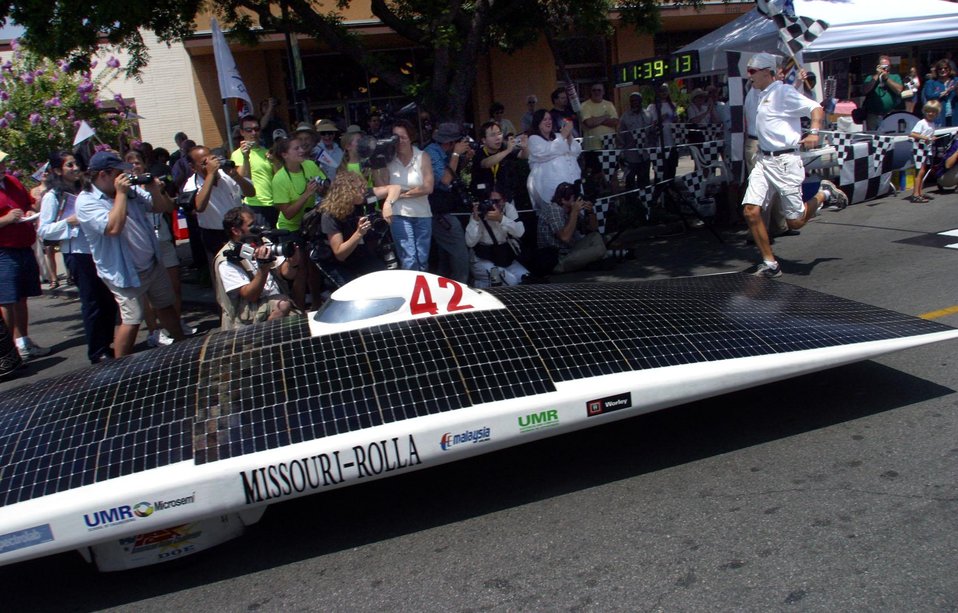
THE UNIVERSITY OF MISSOURI-ROLLA SOLAR CAR AS IT CROSSES FINISH LINE TO WIN THE AMERICAN SOLAR CHALLENGE, 2003.

THE AMERICAN SOLAR CHALLENGE, THE LONGEST SOLAR CAR RACE IN THE WORLD, IS A DOE SPONSORED EDUCATIONAL EVENT IN WHICH TEAMS COMPETE TO BUILD AND RACE SOLAR-POWERED CARS. TWENTY UNIVERSITIES PARTICIPATED IN THIS YEAR'S EVENT WHICH STARTED IN CHICAGO, ILLINOIS ON JULY 13 AND FOLLOWED ROUTE 66 FOR 2300 MILES TO CLAREMONT, CALIFORNIA, ENDING ON JULY 23, 2003. THE UNIVERSITY OF MISSOURI-ROLLA WON BY FINISHING IN 51 HOURS, 47 MINUTES AND 39 SECONDS.